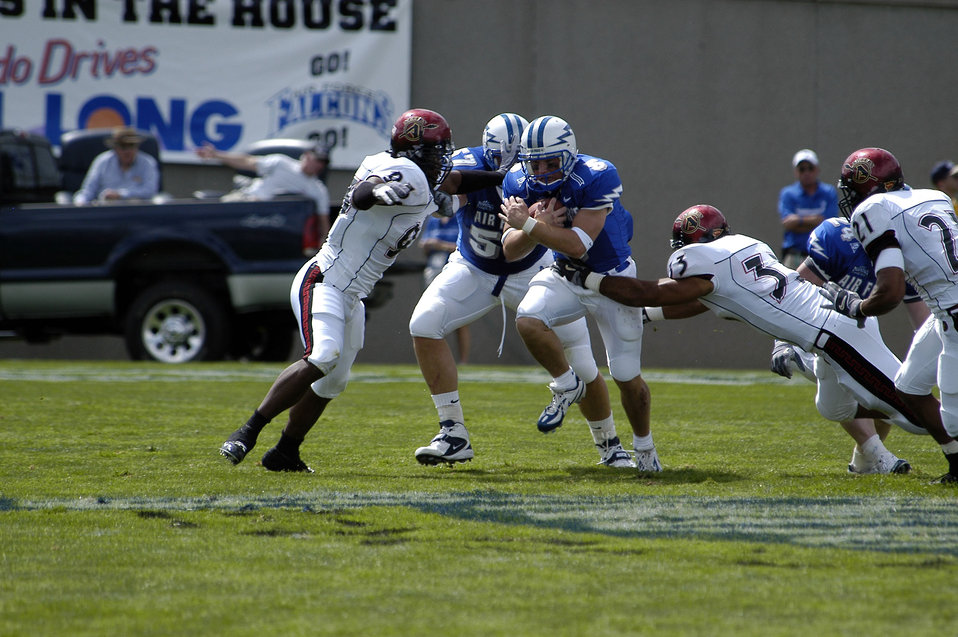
Falcons win

U.S. AIR FORCE ACADEMY, Colo. -- Falcon quarterback Shaun Carney protects the ball as he tries to avoid San Diego State University Aztecs Antwan Applewhite, 93, and Freddy Keiaho, 33. The sophomore signal-caller ran for 81 yards and passed for another 231. The Falcons beat the Aztecs 41-29.